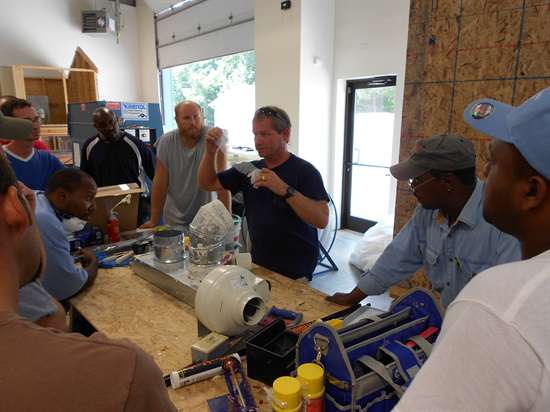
A weatherization trainer instructs a group of students on how to seal a duct as part of the training offered by the Weatherization Assistance Program Technical Assistance Center.